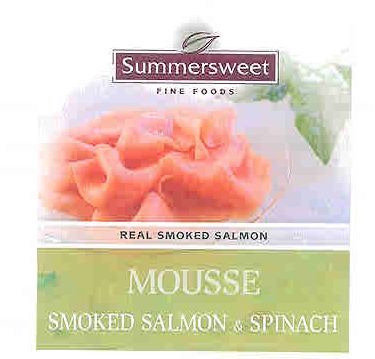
RECALLED - Dip and Mousse

April 15, 2011 - Product Recall - Charcuterie La Tour Eiffel Recalls Mousses and Dips.